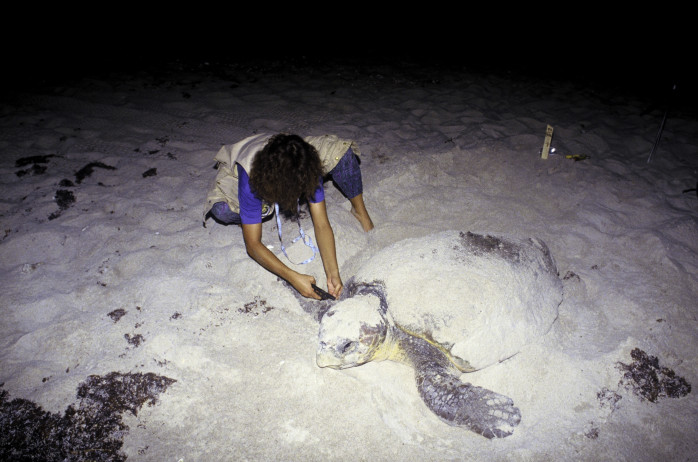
Archie Carr National Wildlife Refuge, FL

Tagging a nesting loggerhead turtle